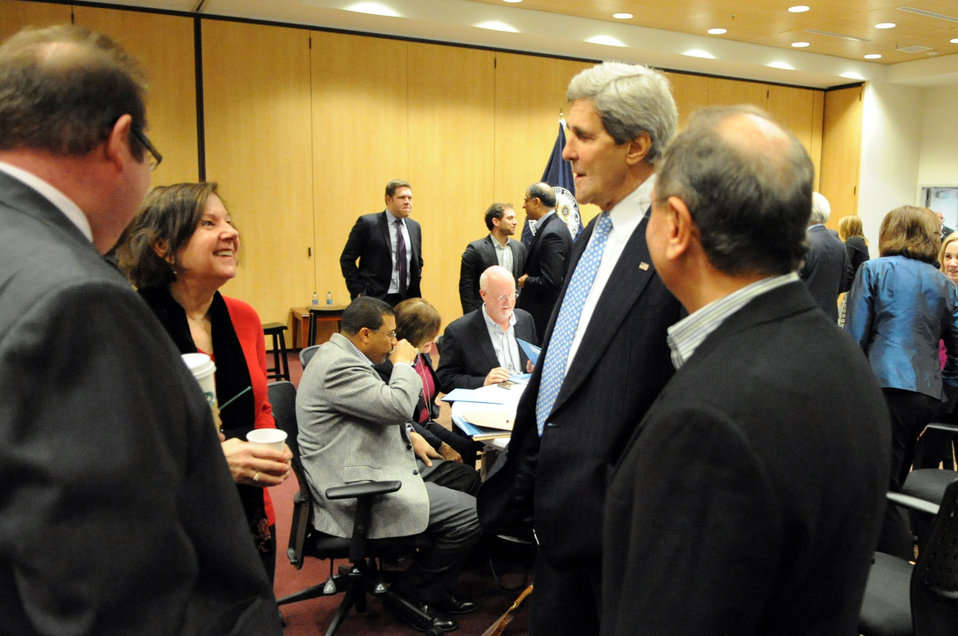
Secretary Kerry Chats With Senior Managers Amid Staff Retreat

U.S. Secretary of State John Kerry chats with Lou CdeBaca, Ambassador-at-Large for the Office to Monitor and Combat Trafficking in Persons; Mary McLeod, Principal Deputy Legal Adviser; and Arnold Chacon, the Department's nominee for Director General of the Foreign Service, at the beginning of a senior staff retreat in Arlington, Virginia, on February 10, 2014.